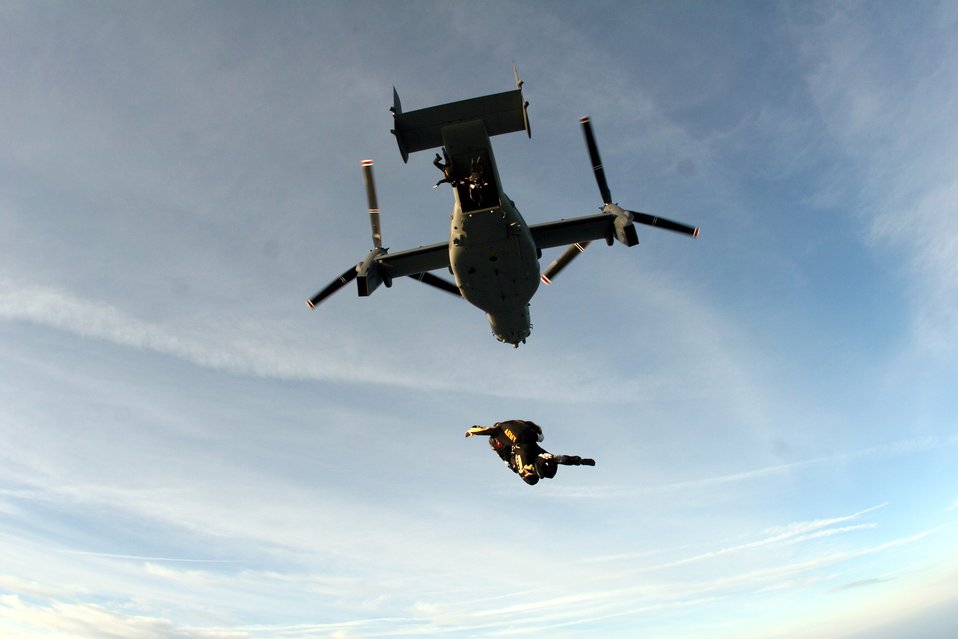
AFSOC helps USSOCOM celebrate 20 years

Tandem jumpers from the U.S. Army Golden Knights parachute team freefall below an Air Force Special Operations Command CV-22 Osprey over MacDill Air Force Base, Fla., April 26. The Osprey and aircrew are from the 8th Special Operations Squadron at Hurlburt Field, Fla.